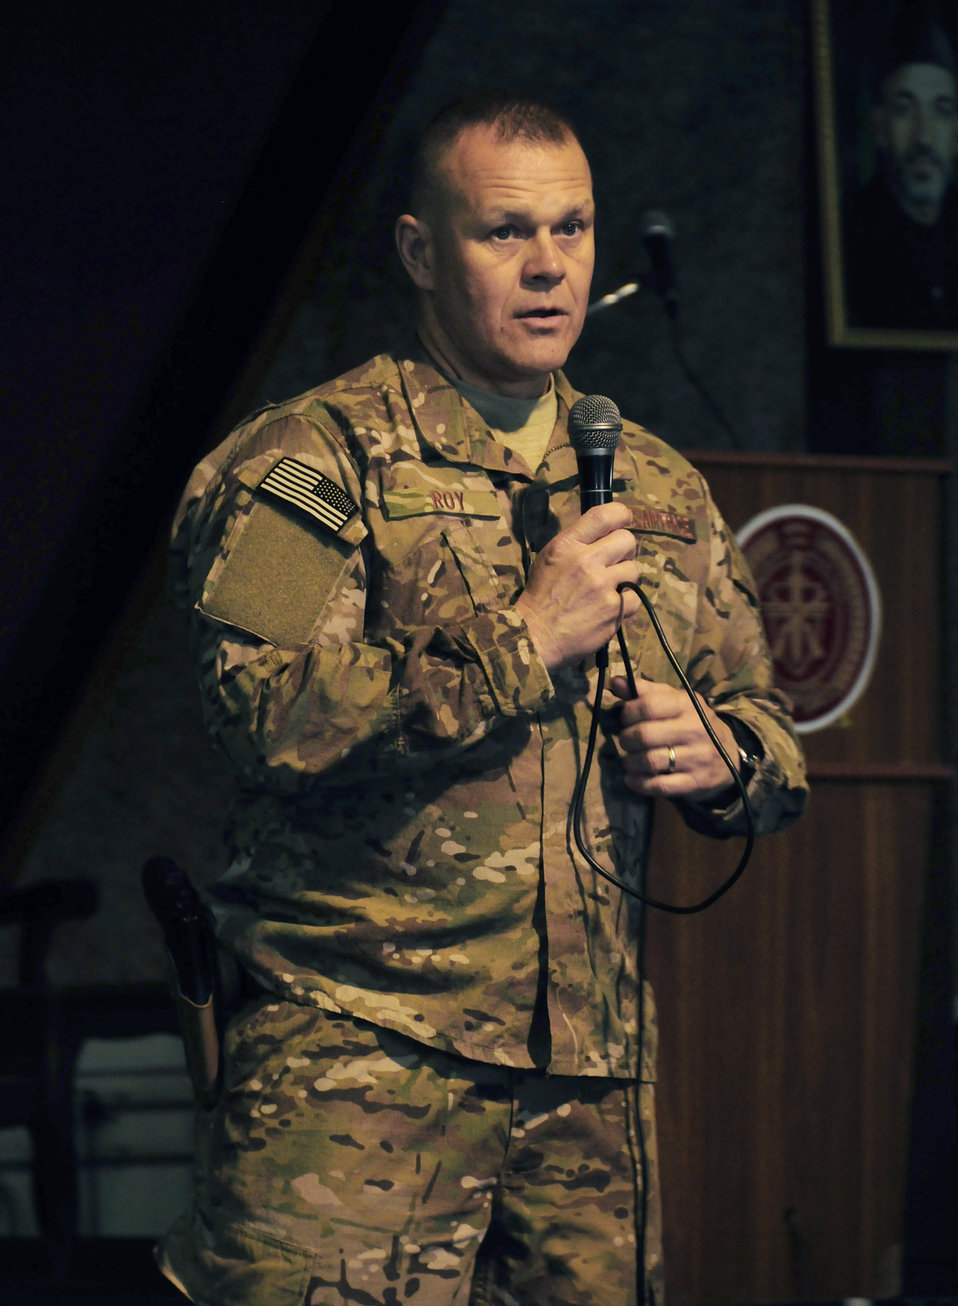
Chief Roy

Chief Master Sgt. of the Air Force James A. Roy speaks to Airmen June 17, 2011, at the Afghan air force compound in Kabul, Afghanistan.